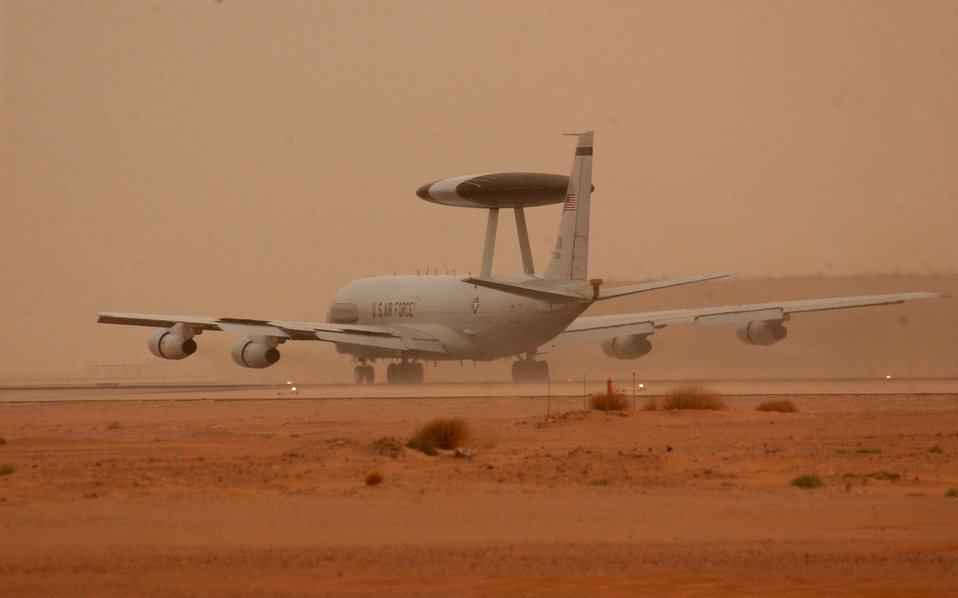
Recon mission

OPERATION IRAQI FREEDOM -- An E-3 AWACS aircraft deployed to the 363rd Air Expeditionary Wing takes off for a mission during a sand storm March 25. Aircraft move around the clock to support Operation Iraqi Freedom at forward deployed locations in Southwest Asia. Operation Iraqi Freedom is the multi-national coalition effort to liberate the Iraqi people, eliminate Iraq's weapons of mass destruction and the regime of Saddam Hussein.